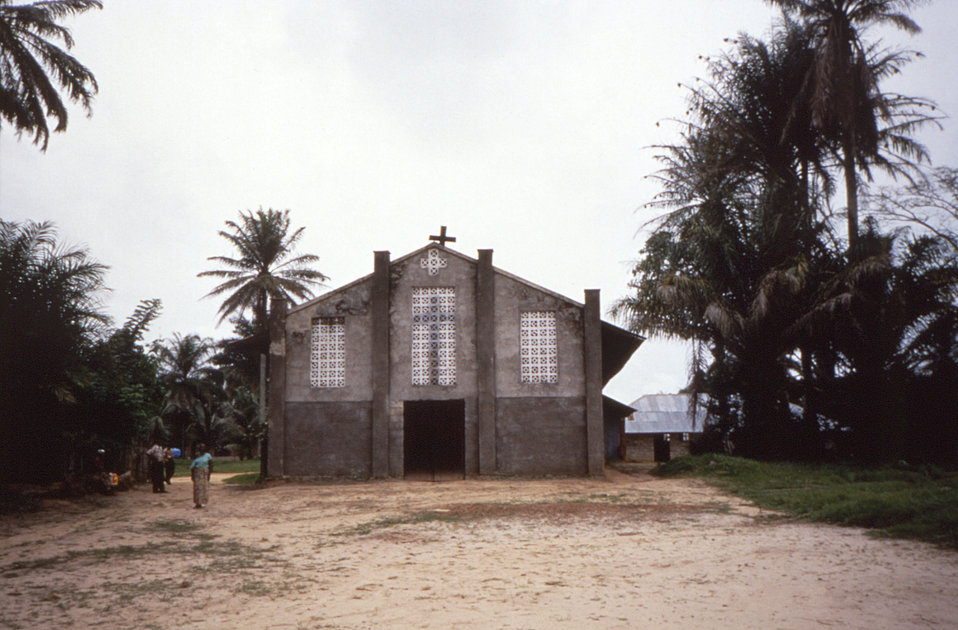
This image was created during a investigation into an outbreak of monkeypox, which took place in the Democratic Republic of the Congo (DRC), 1996 to 1997, formerly Zaire. This image depicted a catholic mission within the Katako-Kombe Health Zone, inside the DRC, which was later visited by a group of retreating Zairian military troops, also referred to as the FAZ. In February 1997, 88 cases of febrile pustular rash had been identified over the previous 12 months in 12 villages within this Katako-Kombe Health Zone, DRC.